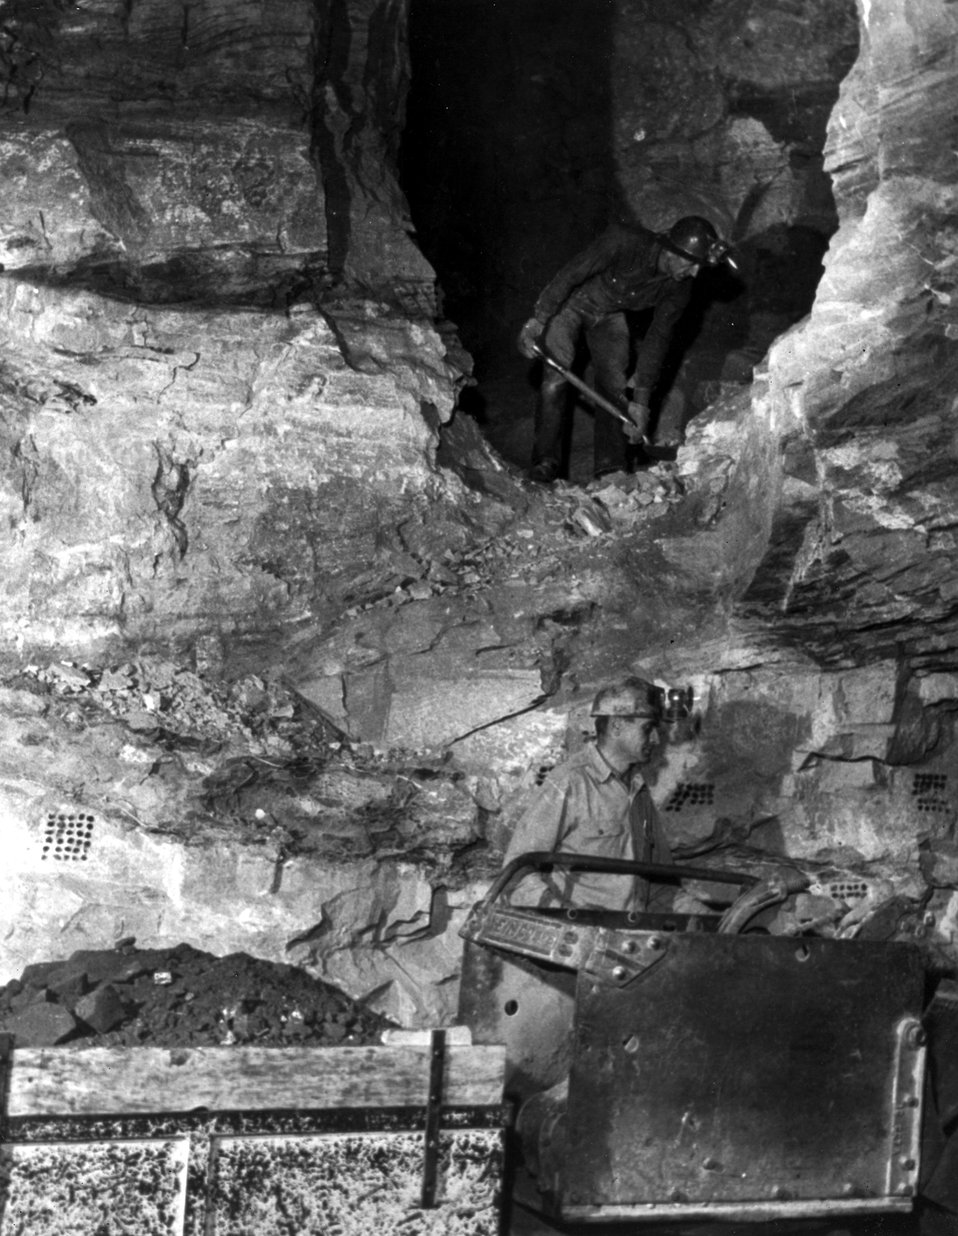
Uranium ore is trammed into ore bins or 'hoppers' outside the mine, in small mine cars. c. 1955